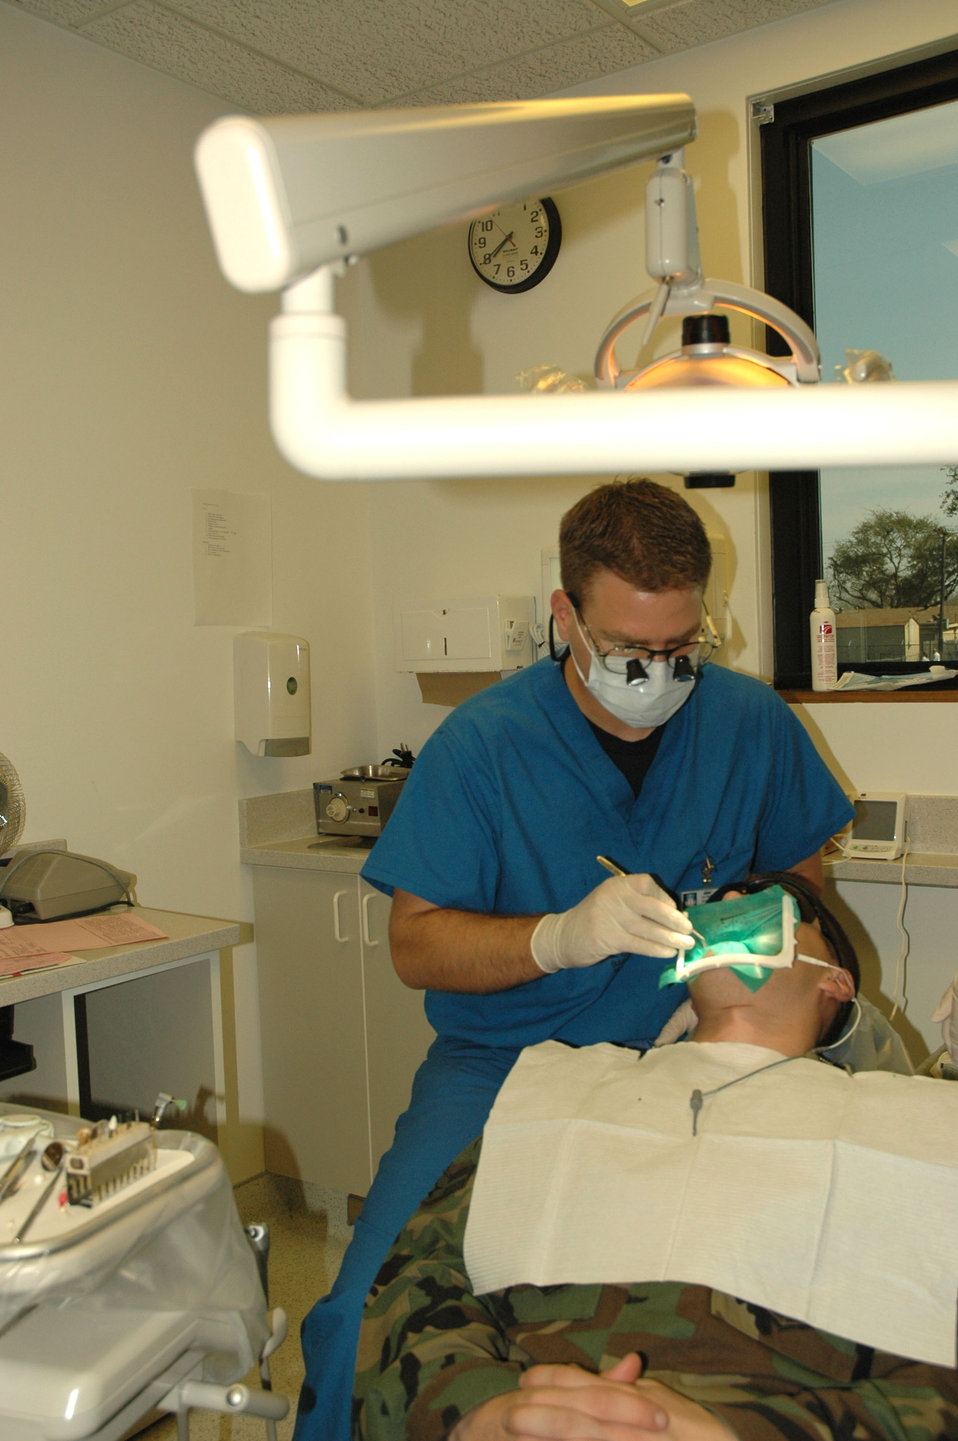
Dental residency program fills experience gap

Capt. (Dr.) Benjamin Clark performs a patient a root canal Monday, March 6, 2006. The advanced education in general dentistry resident program at Barksdale Air Force Base, La., is the only Air Force dentistry program that accepts dentists who have already served in the military for a few years. Doctor Clark is assigned to the 2nd Dental Squadron.